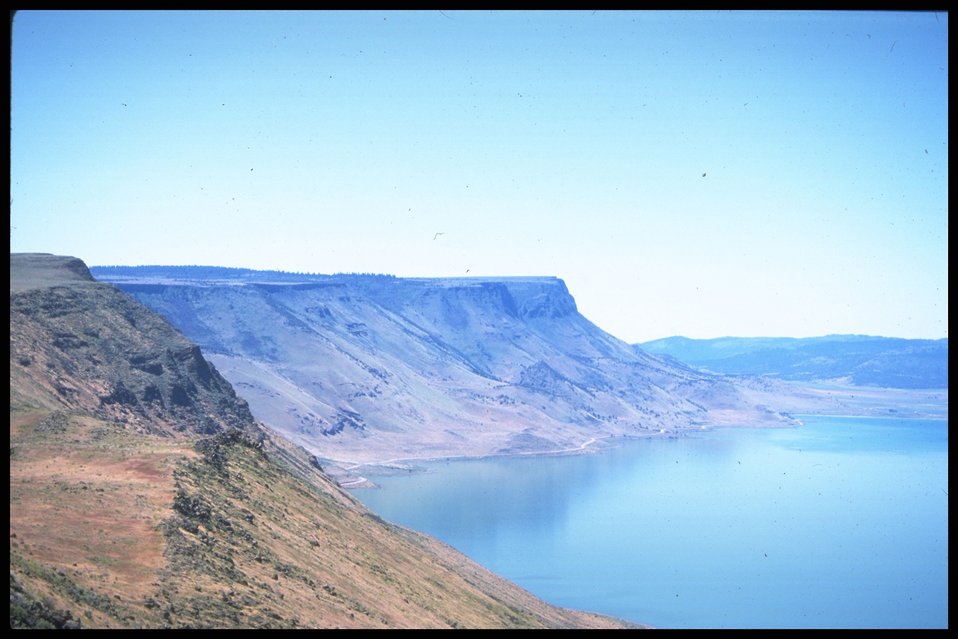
Scenic view of Lake Abert and Abert Rim. Lakeview District.